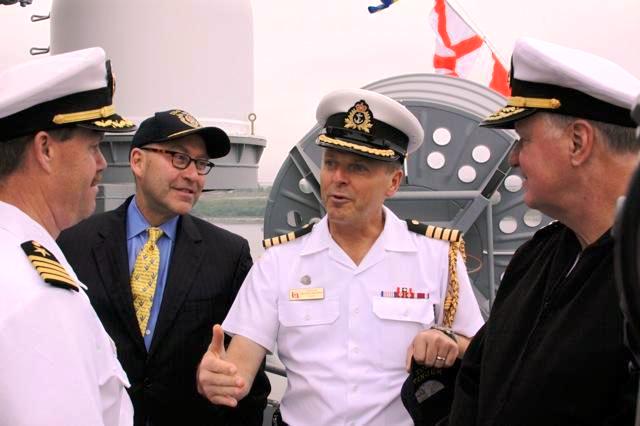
U.S. Naval Attache Jrdon, CNO Admiral Roughead, Canadian Naval Attache Bergeron, and Ambassador Jacobson Speak Aboard the USS Wasp

U.S. Naval Attaché Stephen Jordon, Chief of Naval Operations Admiral Gray Roughead, Canadian Naval Attaché to the U.S. Captain Richard Bergeron, and U.S. Ambassador to Canada David Jacobson speak aboard the USS Wasp in Halifax, Nova Scotia, Canada, on June 30, 2010.